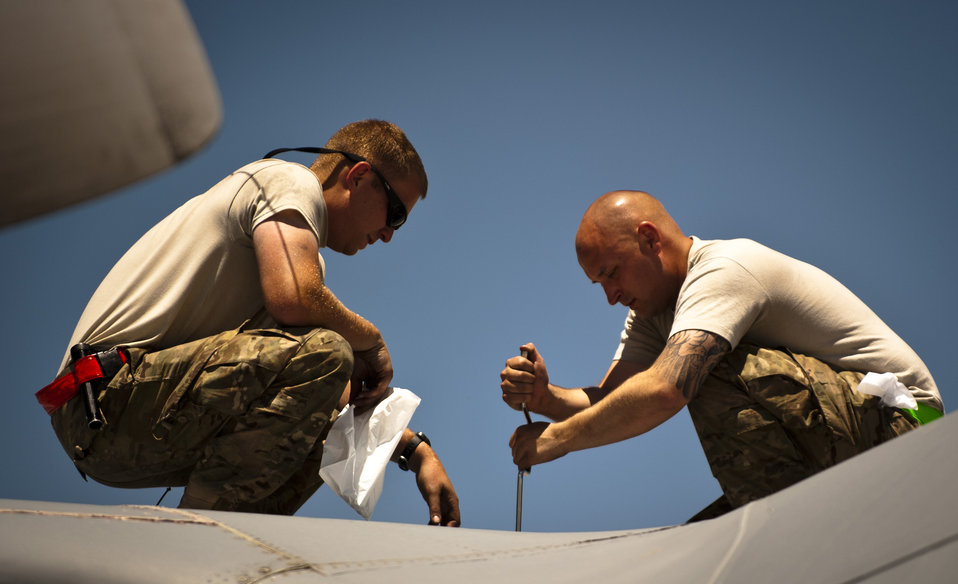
Hercules: A day in the life

Staff Sgts. Eric Wahl, left, and Rodney Nelon work on a C-130H Hercules assigned to the 774th Expeditionary Airlift Squadron at Bagram Airfield, Afghanistan, June 2, 2012. The C-130H provides daily tactical airlift support to combat forces in Afghanistan. Both Wahl and Nelon are aircraft hydraulics systems craftsmen deployed to the 455th Expeditionary Aircraft Maintenance Squadron.